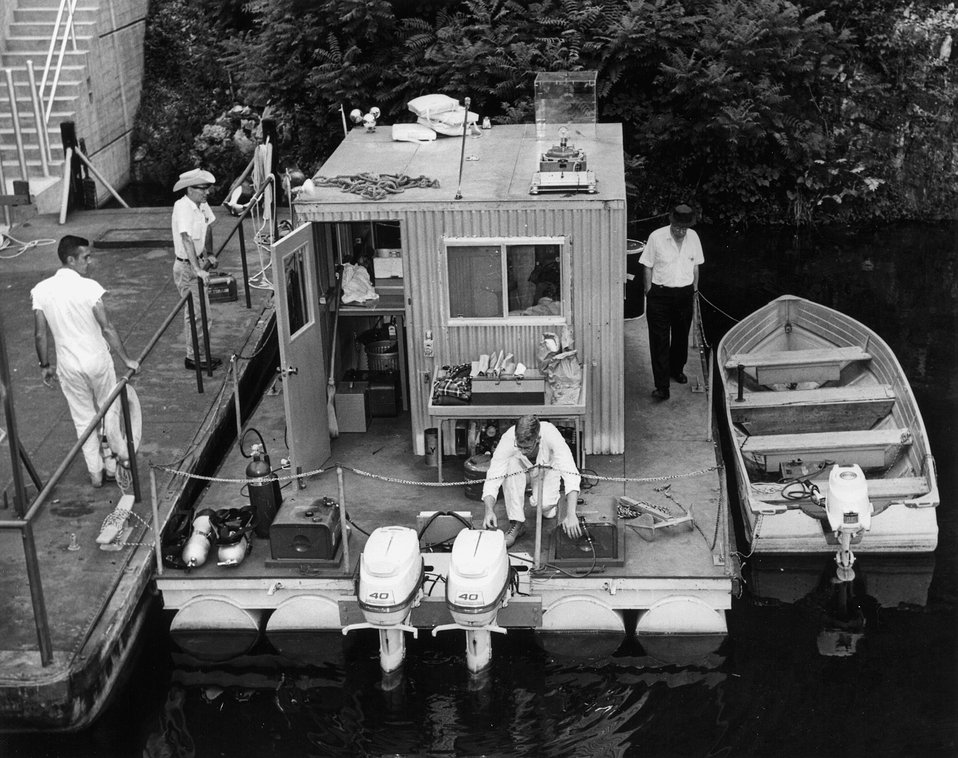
Studies of the types, distribution, and habits of fish and other aquatic life in the lakes and rivers in the Oak Ridge area are carried out by participants in the radiation-ecology courses presented by the Special Training Division of Oak Ridge Associated Universities, in cooperation with Oak Ridge National Laboratory. c. 1970